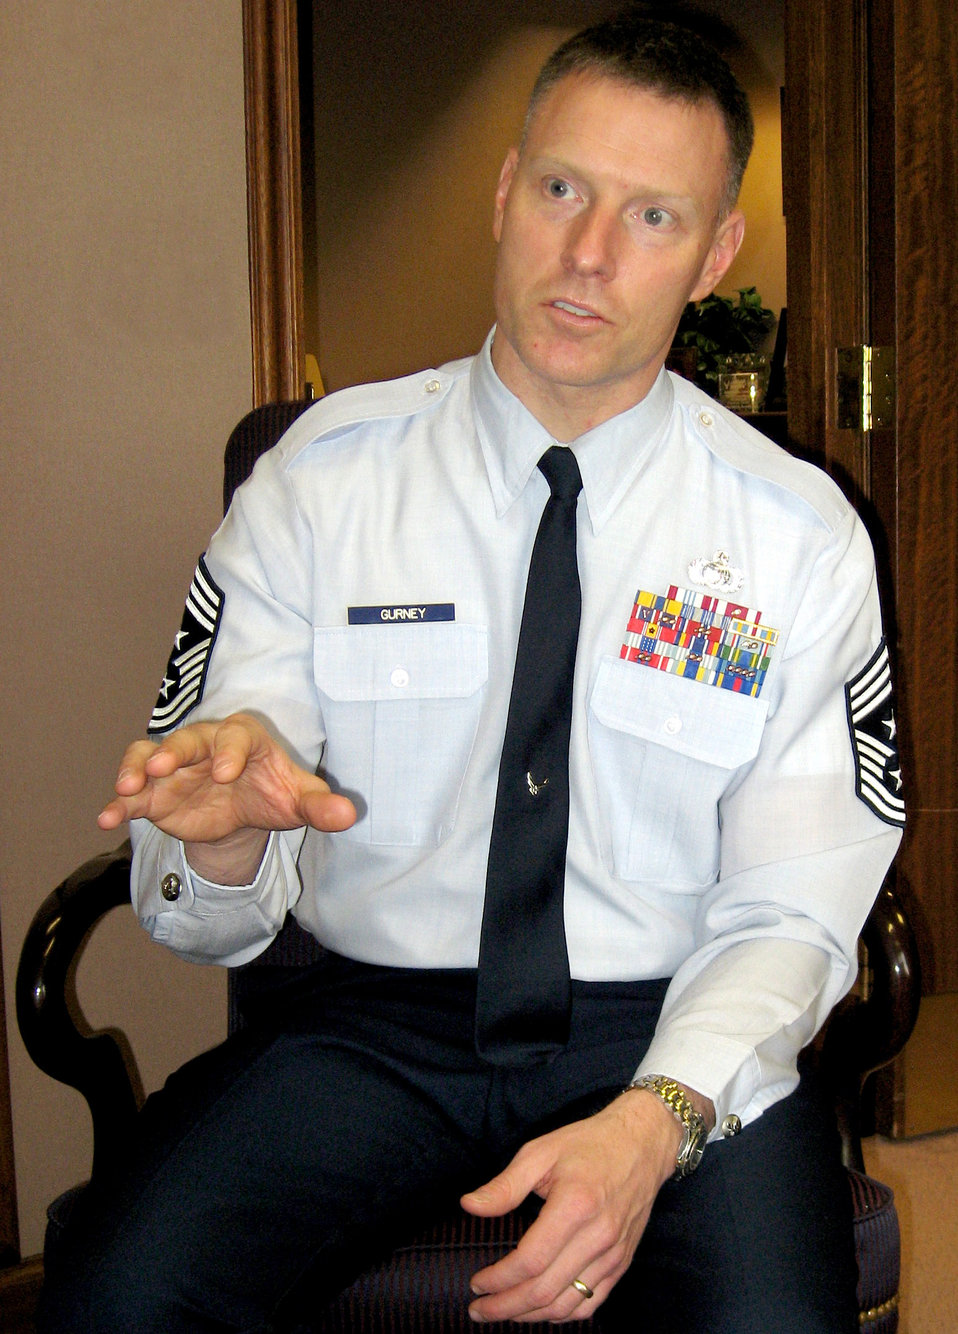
AFMC command chief emphasizes understanding one's role

Chief Master Sgt. William Gurney describes his personal communication style as